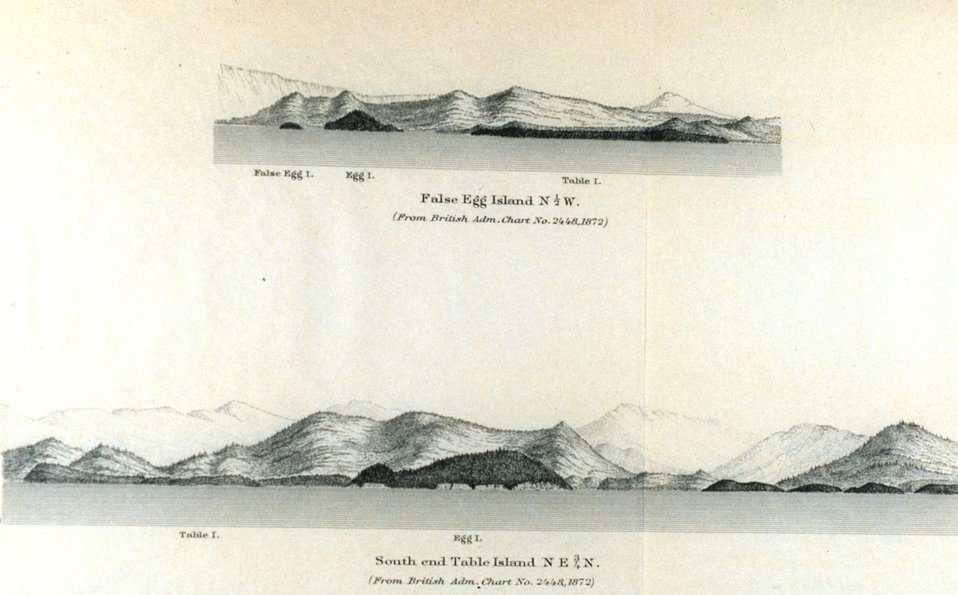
False Egg Island. South End Table Island. In: Pacific Coast Pilot Alaska Part I 1883. P. 20. Library call number VK943 .N3 1883.